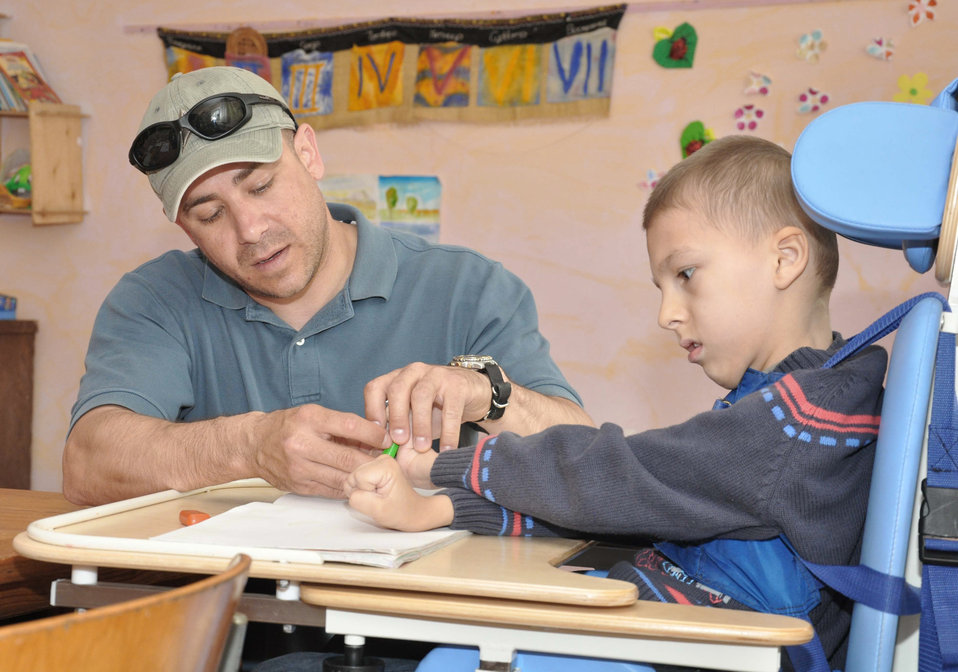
Manas Airmen help support Kyrgyzstan disabled children

Master Sgt. Jeff Villemarette helps a boy with cerebral palsy color during a special education class April 27, 2010, at the Nadjeshda Children's Center in Kyrgyzstan. Nadjeshda is home for 60 children and teenagers who are disabled in different ways. Sergeant Villemarette is assigned to the Transit Center at Manas.